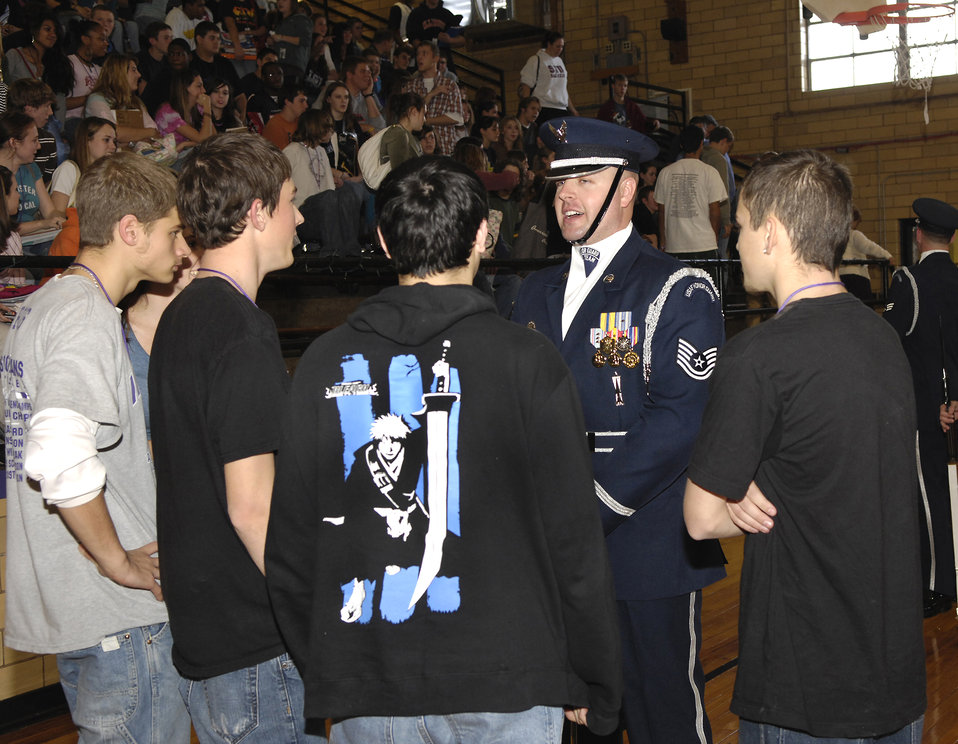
Airmen inspiration

U.S. Air Force Honor Guard Drill Team commander Tech. Sgt. Toby Farr speaks to students Dec. 12 at Mascoutah High School in Mascoutah, Ill. The Drill Team travels stateside and abroad performing drills for public and military audiences to recruit and inspire current and future Airmen.